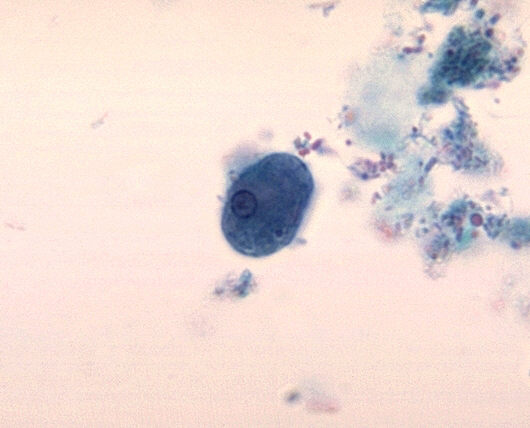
Entamoeba histolytica trophozoite with atypical nucleus. Trichrome stain.